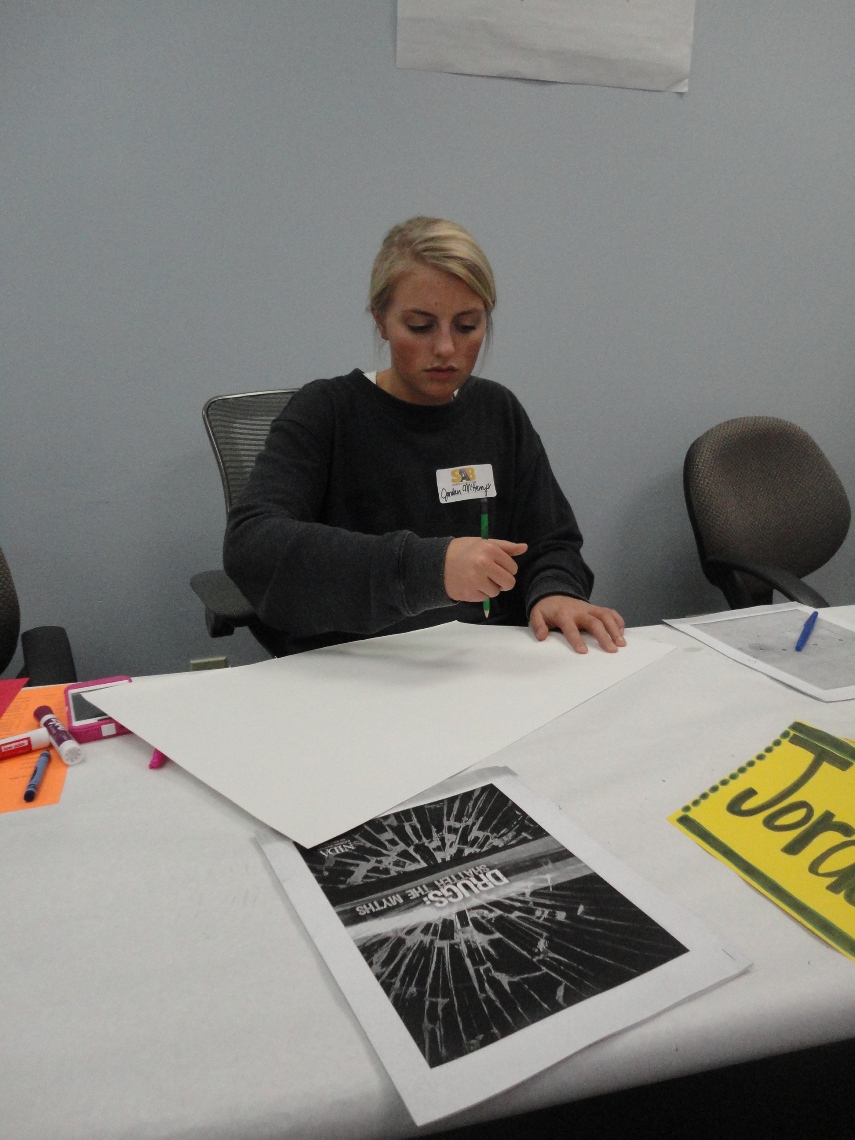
DREAM's, MS Student Advisory Board of Youth Highway Safety NDFW 2013

.Mississippi High School Students participate in NDFW 2013 events.